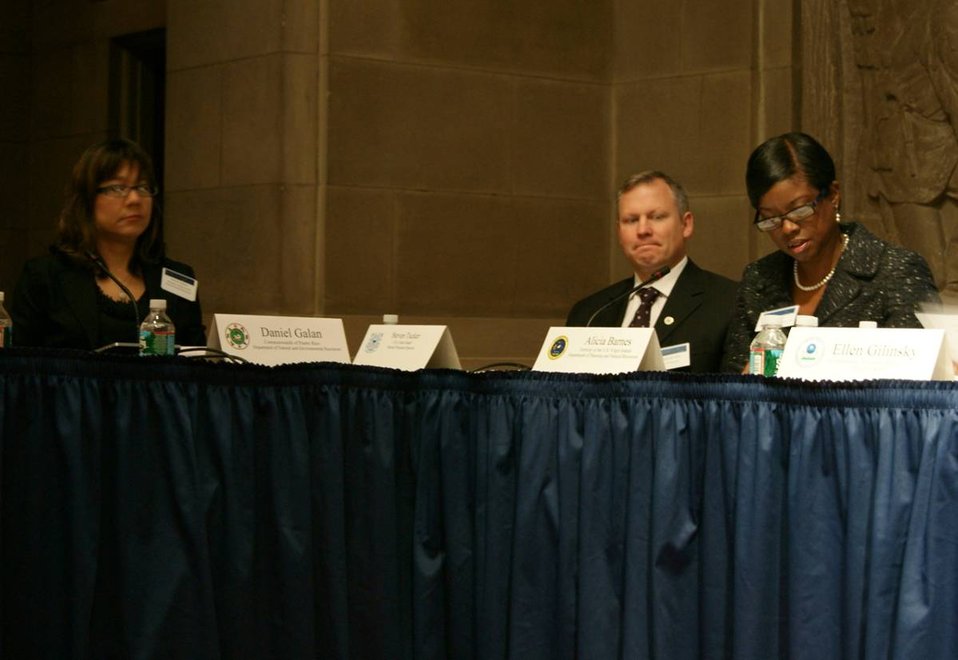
Coral Reef Task Force - Winter Meeting 2012